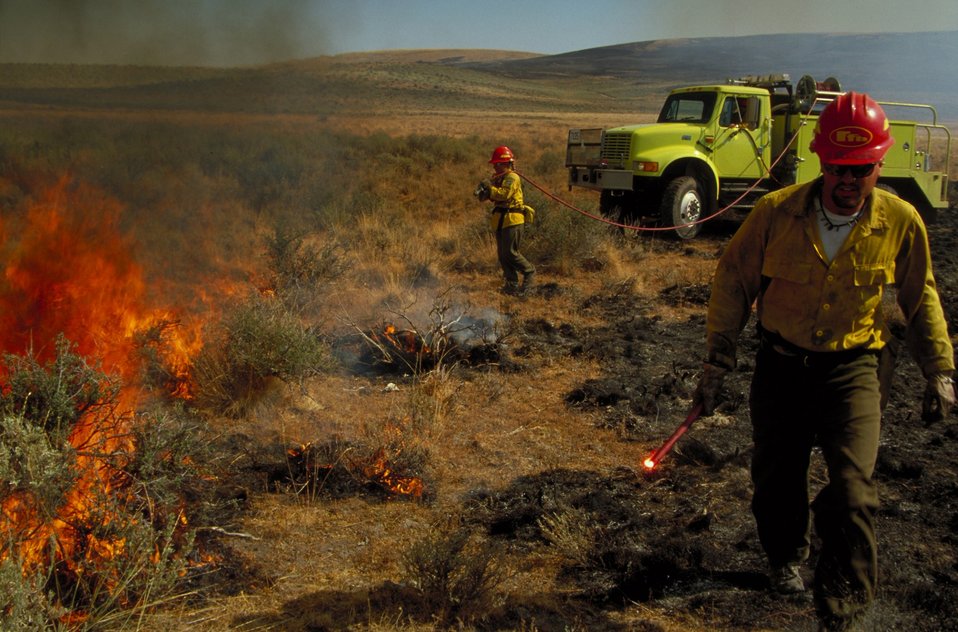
Prescribed brush burning Fire Season 2000 Lower Snake River District LSRD